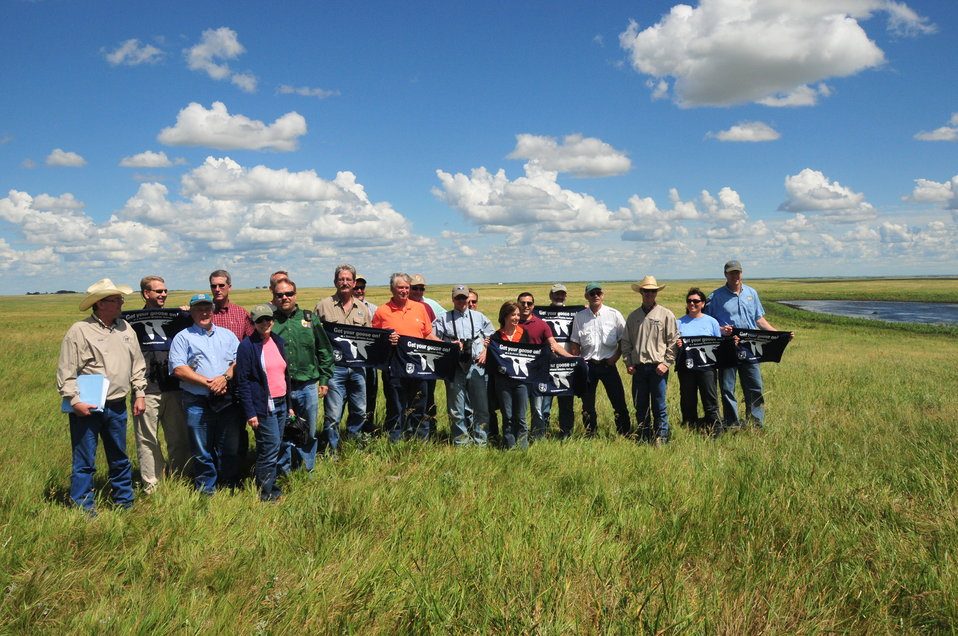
Get Your Goose On!

The national meeting for regional chiefs of the National Wildlife Refuge System is held three times a year in different locations around the country. This 2012 meeting took place in McPherson County, South Dakota, and focused on the Dakota Grassland Conservation Area.

This photo was taken on the Wade Weiszharr and Family Ranch, which contains perpetual U.S. Fish and Widlife grassland and wetland easements. This site is also located in the heart of Prairie Pothole Region, making it extremely productive migratory bird habitat and a great place to “Get your goose on!”

Here is a group shot taken on the Wade Weisszhauer Ranch!